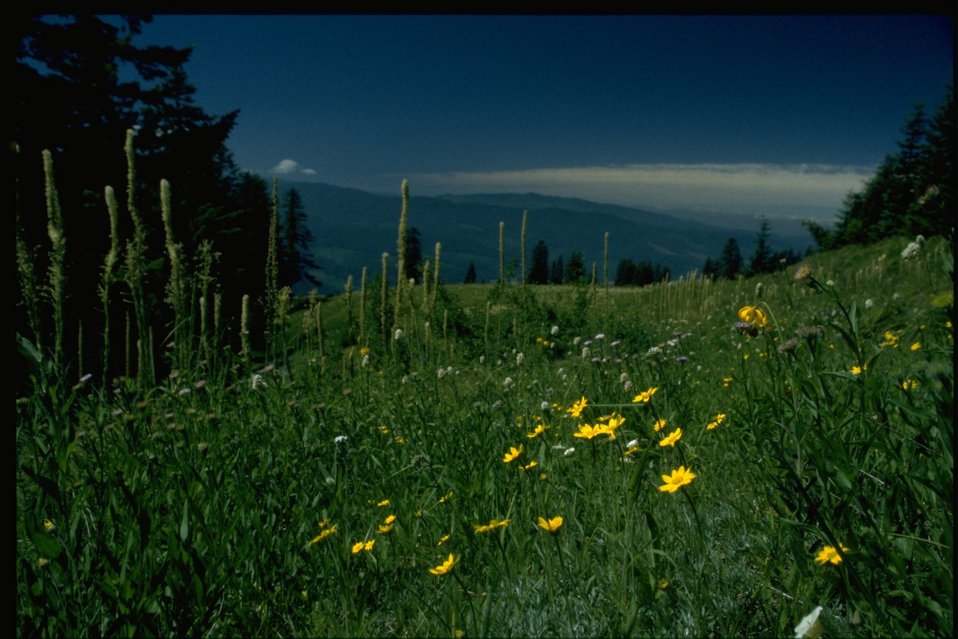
Scenic View, Meadow, Asteraceae polygonum bistortoides, Xenophyllum tenax.